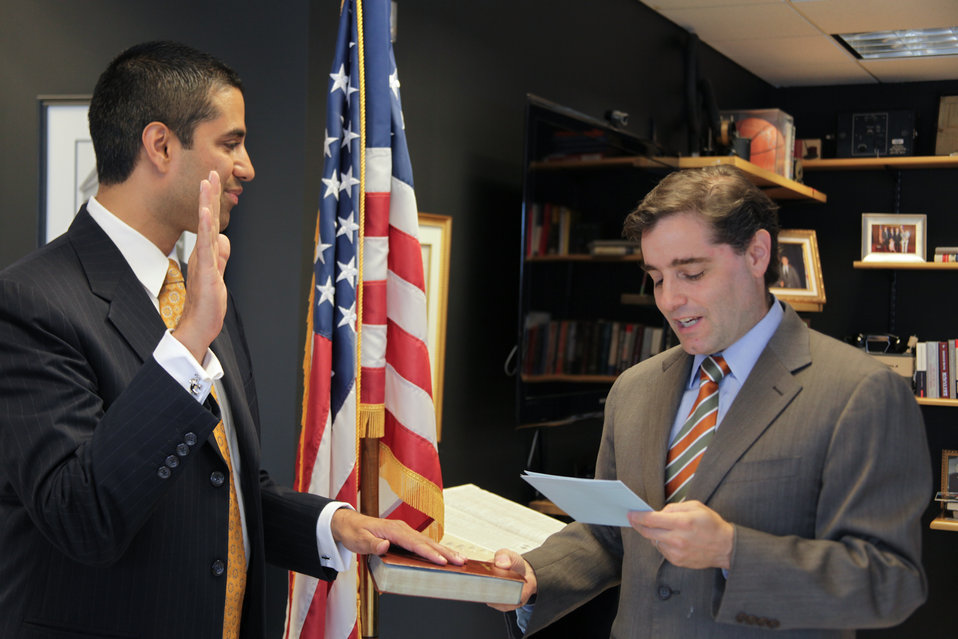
FCC Chairman Genachowski swears in Ajit Pai as the new Commissioner

FCC Chairman Genachowski swearing in Ajit Pai as the new Commissioner at the FCC headquarters in Washington, DC.

May 14, 2012.